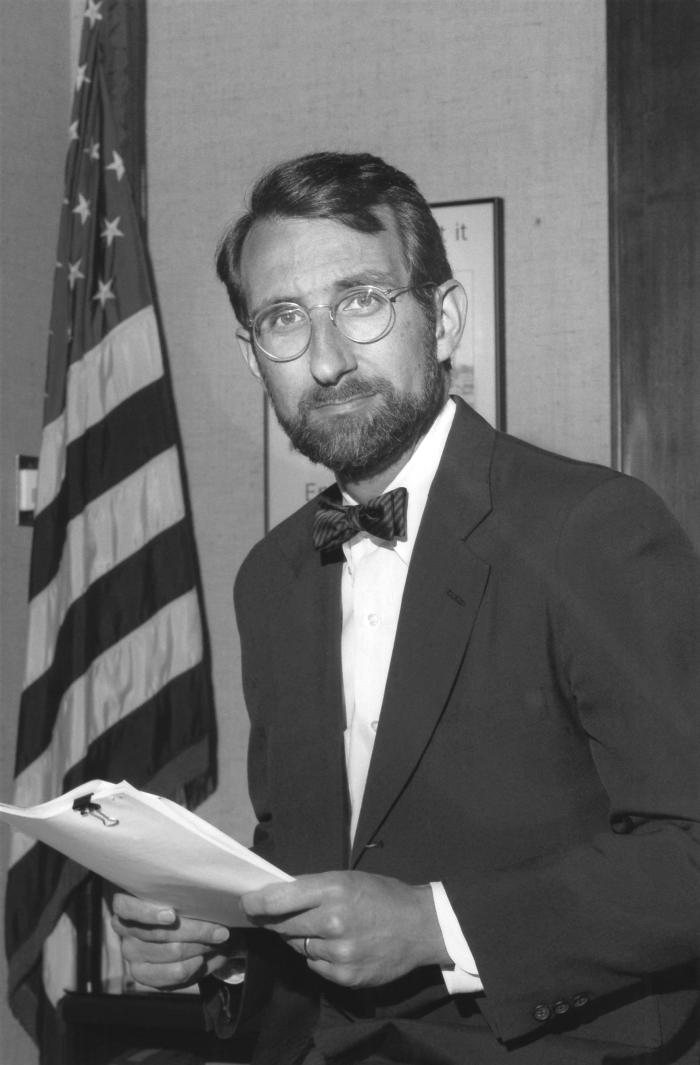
This photograph depicted one of the Centers for Disease Control's (CDC) former Directors, William L. Roper, M.D., M.P.H., who was the organization's Director from 1990 until 1993. In Dr. Roper's own words, 'Overall, efforts at CDC during 1990--1993 were focused on strengthening the role of public health in the nation's health system and emphasizing the value of prevention as the essential path to good health. By strengthening relationships with public health partners, building new partnerships with the private sector, and increasing the diversity of CDC's workforce, CDC became better equipped to fulfill its role as the nation's prevention agency.'